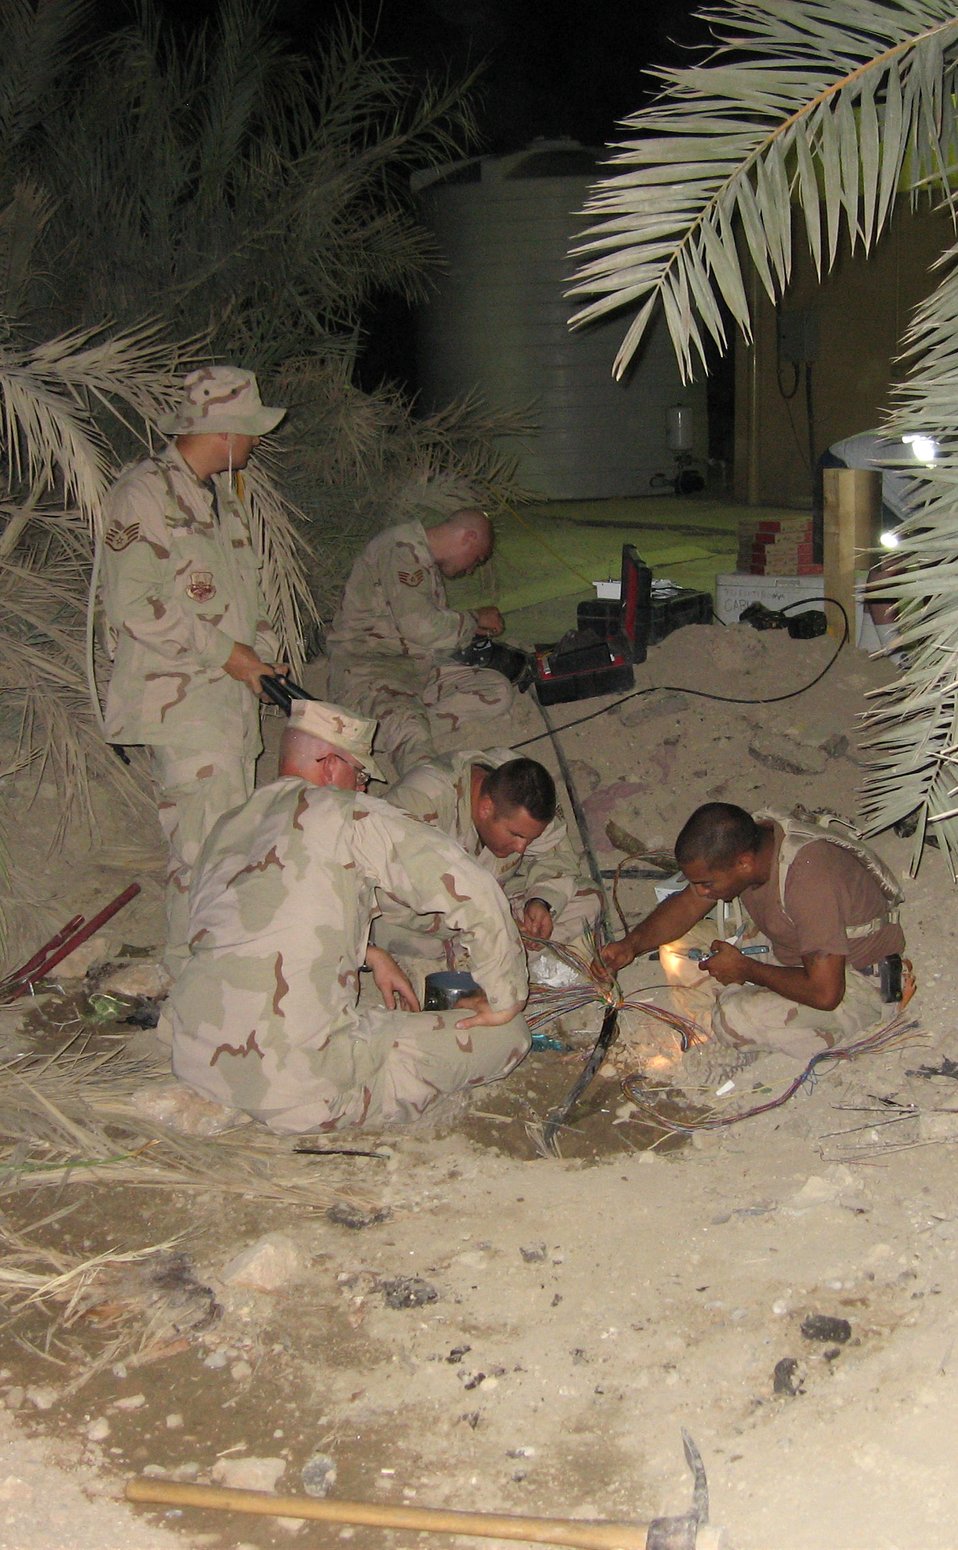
Dawgs get dirty, put PERSCO back online

ALI BASE, Iraq -- Airmen with the 407th Expeditionary Communications Squadron work in and around an illuminated hole to the 407th Personnel Support fro Contingency Operations section's communications back online.